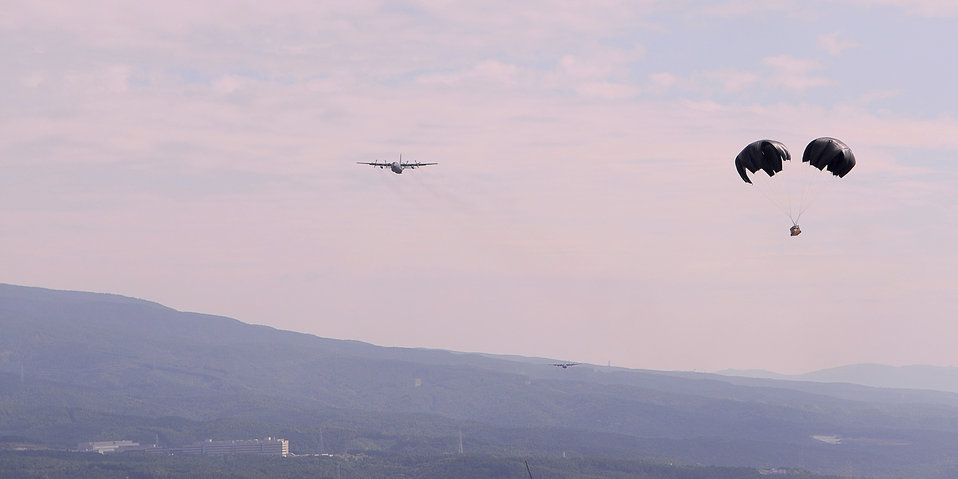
Low Cost Low Altitude training

A cross parachute carries a cargo load dropped out of a C-130 Hercules during a practice of the low-cost, low-altitude drop technique Oct. 7, 2010, at the Fuji Drop Zone in Japan. Sergeant Anderson is assigned to the 374th Logistic Readiness Squadron combat mobility flight.